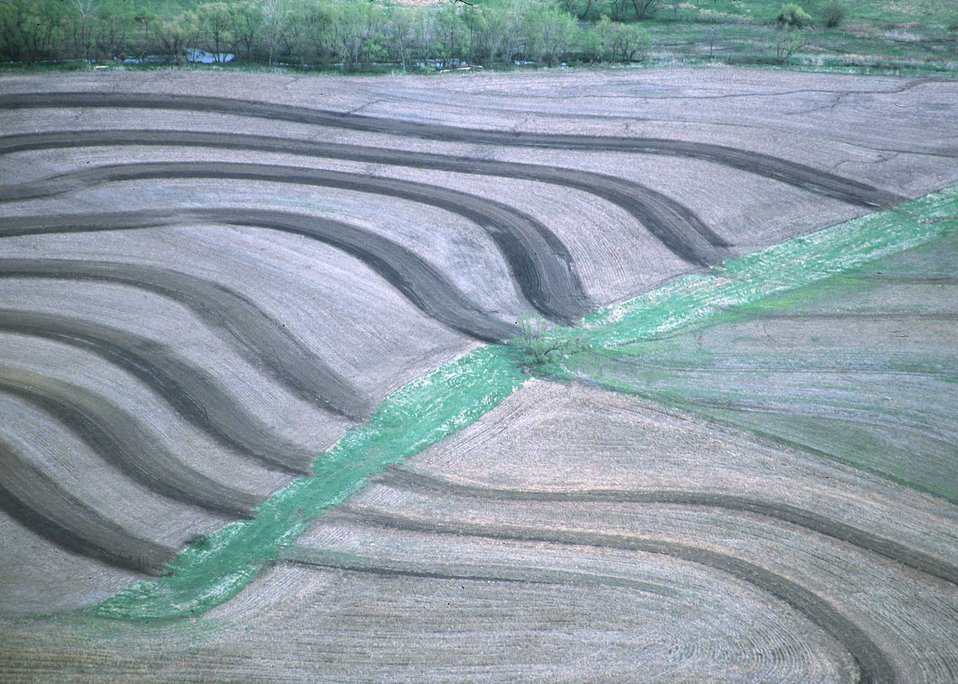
Aerial view on contour terraces and grassed waterways for erosion control. Kansas.